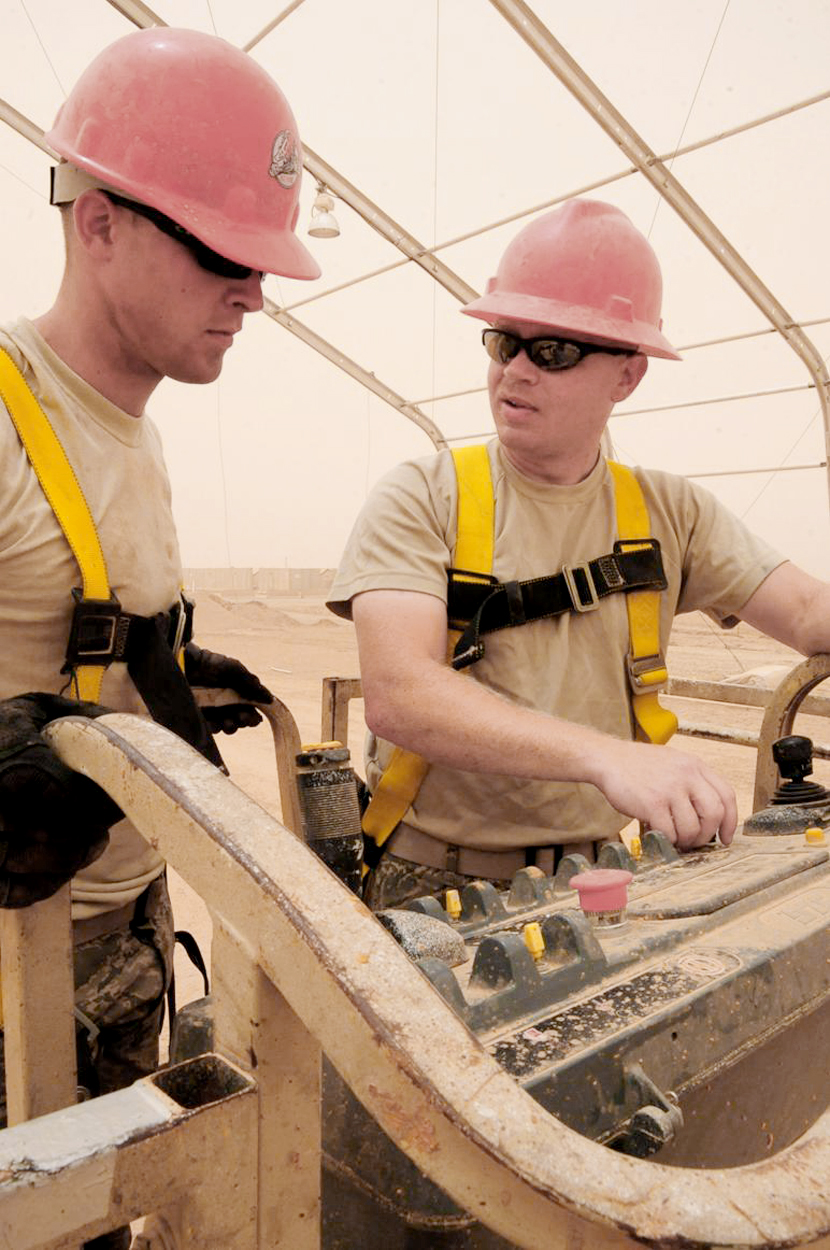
RED HORSE is back in Iraq

Senior Airman David Schrock, Heavy Equipment Operator deployed from Nellis AFB (L) and Tech. Sgt. Clayton Heimert from Camp Perry, Ohio ANG Base, review operating procedures for a four-wheel drive service platform at Ali Base, Iraq, May 14, 2010.